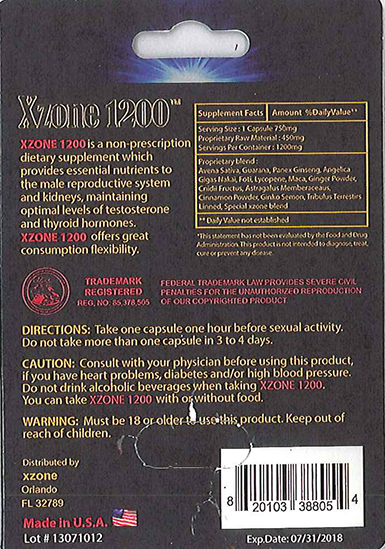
RECALLED – Dietary Supplement

April 1, 2014 – Product Recall – Nova Products, Inc. Issues Voluntary Nationwide Recall of Dietary Supplements with Undeclared Active Pharmaceutical Ingredients.